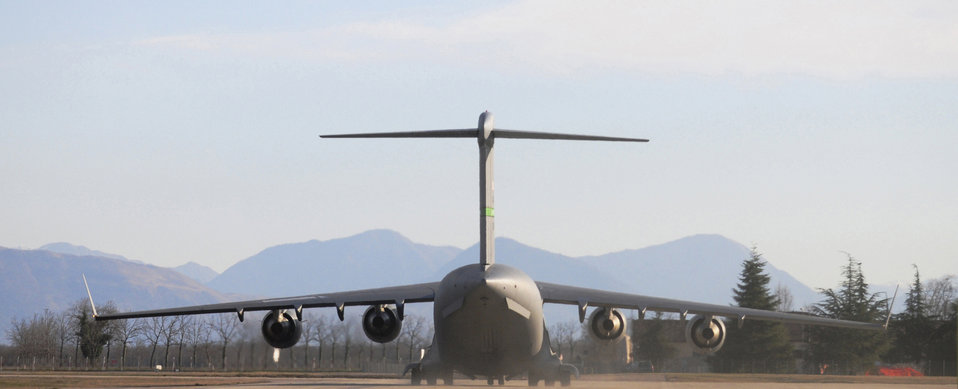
Odyssey Dawn

A U.S. Air Force C-17 Globemaster III from McChord Air Force Base, Wash. lands at Aviano Air Base, Italy in support of Operation Odyssey Dawn March 20, 2011. Joint Task Force Odyssey Dawn is the U.S. Africa Command task force established to support the larger international response to the unrest in Libya. A broad coalition of nations are partnering to enforce U.N. Security Council Resolution (UNSCR) 1973, which authorizes all necessary means to protect civilians in Libya under threat of attack by Qadhafi regime forces. JTF Odyssey Dawn is commanded by Admiral Samuel J. Locklear, III.